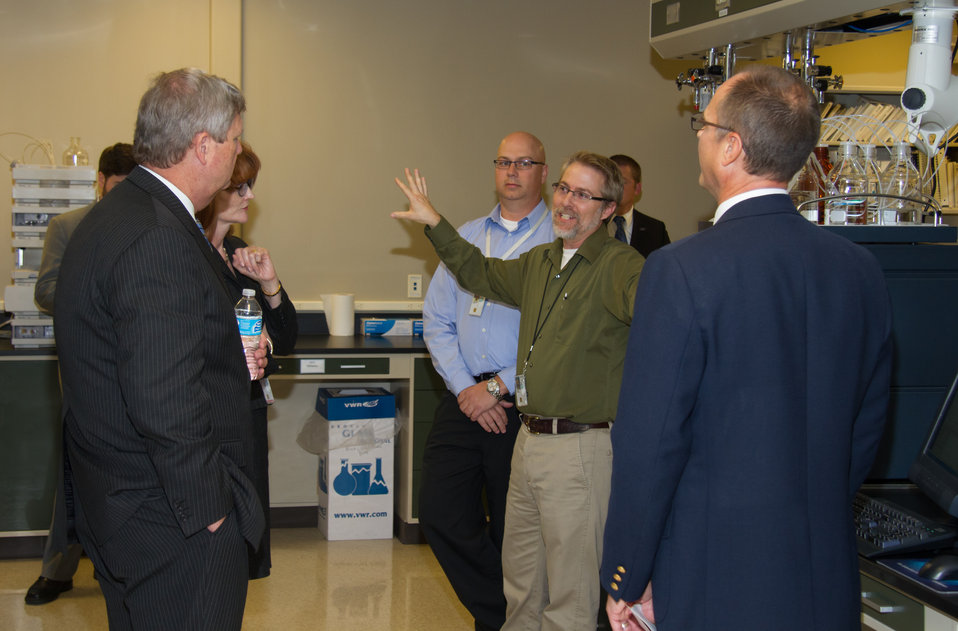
Tom Weber, (arms raised), Leader of Grain Inspection, Packers and Stockyards Administration (GIPSA), Trace Analysis Laboratory explains to Agriculture Secretary Tom Vilsack and Mary Alonzo, (l) how grain samples pass through the preparation and clean up processes in several laboratories prior to analysis by High Performance Liquid Chromatography in Kansas City, MO, on Wednesday, Oct. 23, 2013.